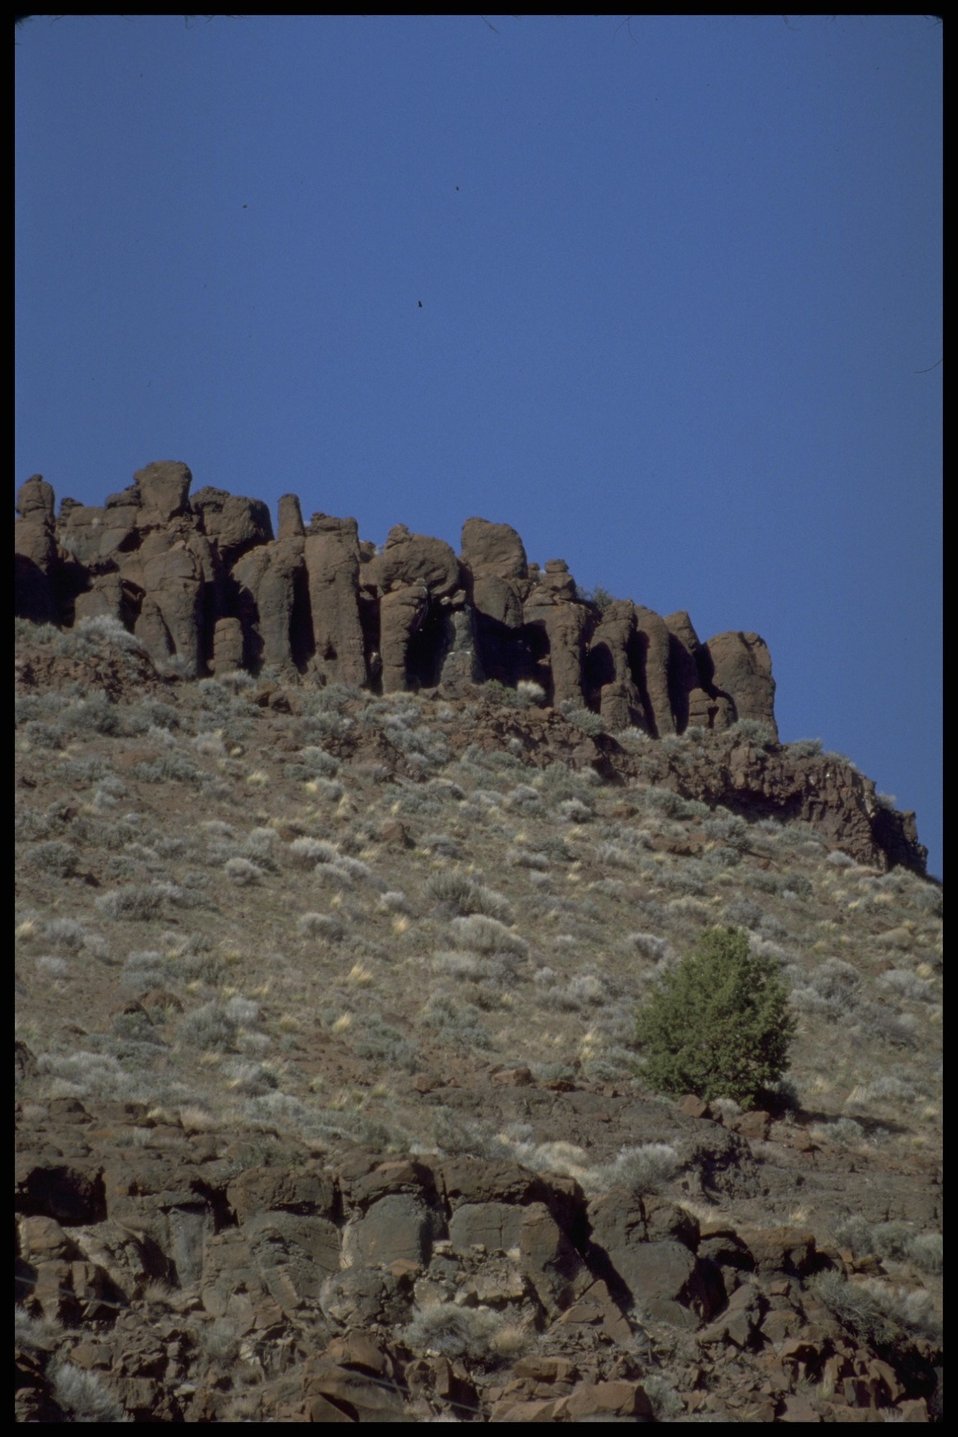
Scenic view from Deep Creek Campground, Lakeview District.